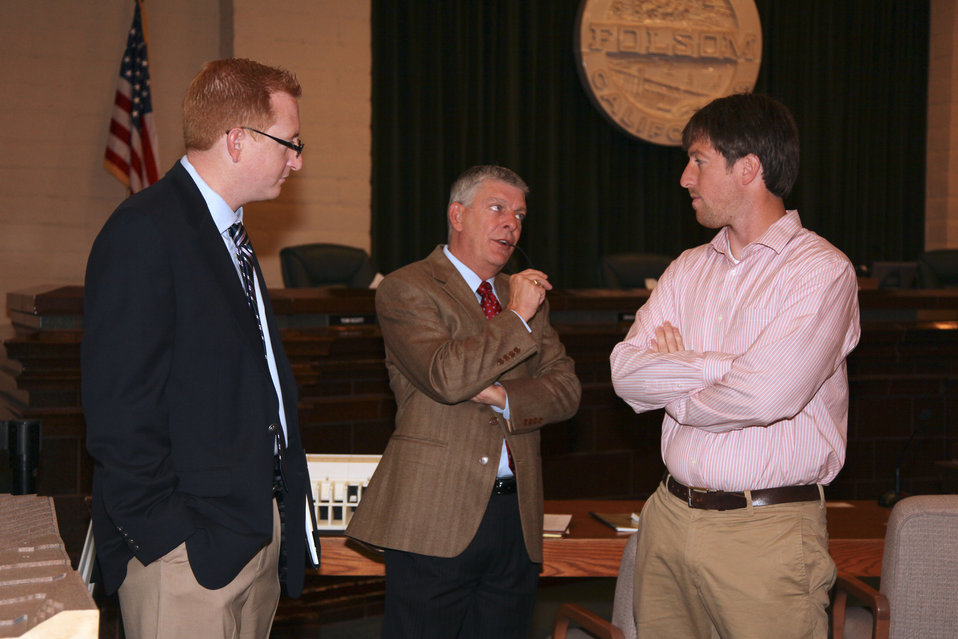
Industry Day for Phase IV of the Folsom Joint Federal Project

David Thomas (center), director of the Folsom Dam Joint Federal Project, and civil engineer Jeff Wisniewski (right), both with the U.S. Army Corps of Engineers Sacramento District, speak with Nathan Dietrich, from Congresswoman Doris Matsui’s office, during an Industry Day event June 7, 2012, at Folsom City Hall in Folsom, Calif. The Sacramento District hosted a pre-solicitation Industry Day for specialized underwater construction for the project’s auxiliary spillway, providing prospective contractors with information about the generalized scope and site conditions for the proposed Phase IV underwater construction. The Folsom Dam Joint Federal Project is a joint effort of the Corps, U. S. Bureau of Reclamation, the Central Valley Flood Protection Board and the Sacramento Area Flood Control Agency to improve the safety of the current dam and reduce flood risk for the greater Sacramento area.